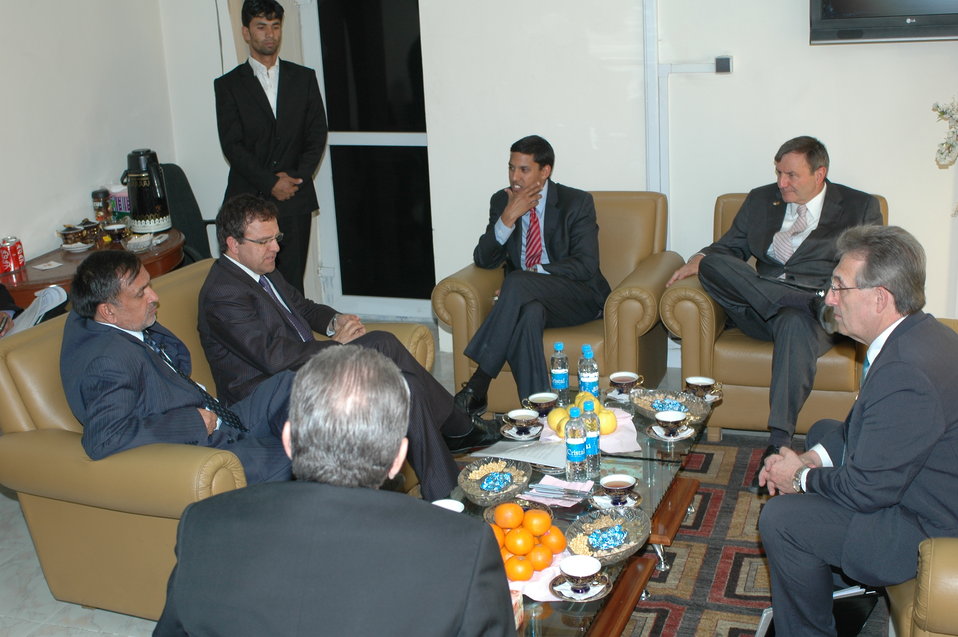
DDP MOU Preparation